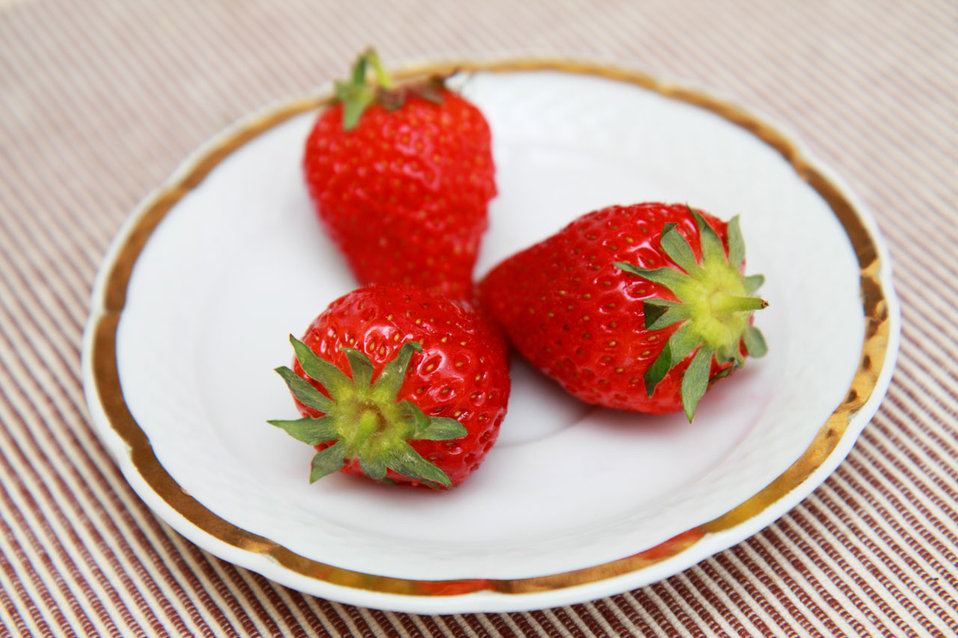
Strawberries on plate

Three ripe strawberries on plate.